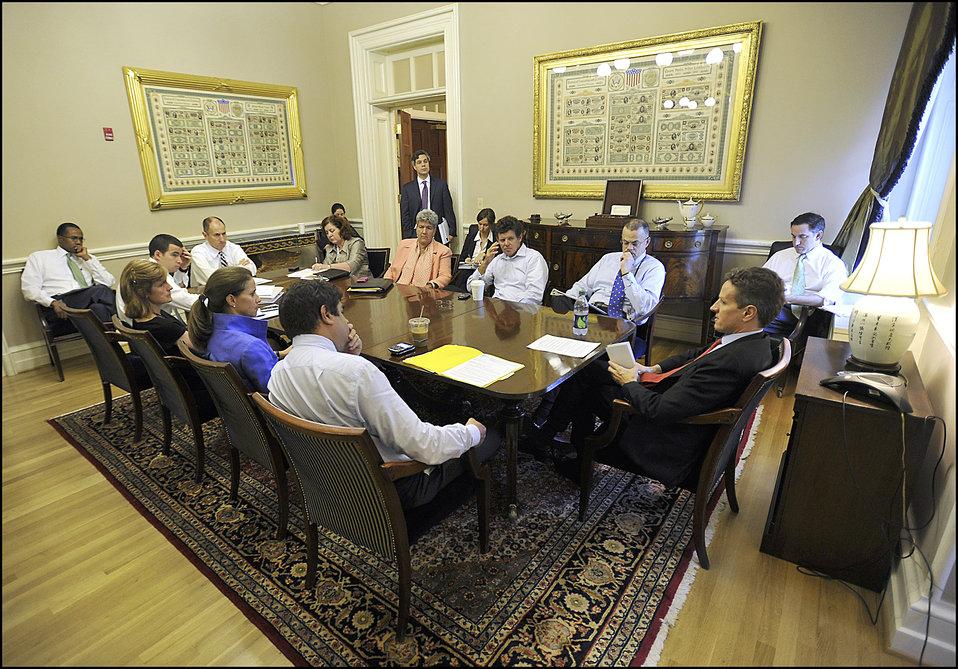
Behind the Scenes: Debt Limit

Treasury Secretary Tim Geithner runs a morning senior staff meeting focused on raising the debt limit on Monday, August 1, 2011.